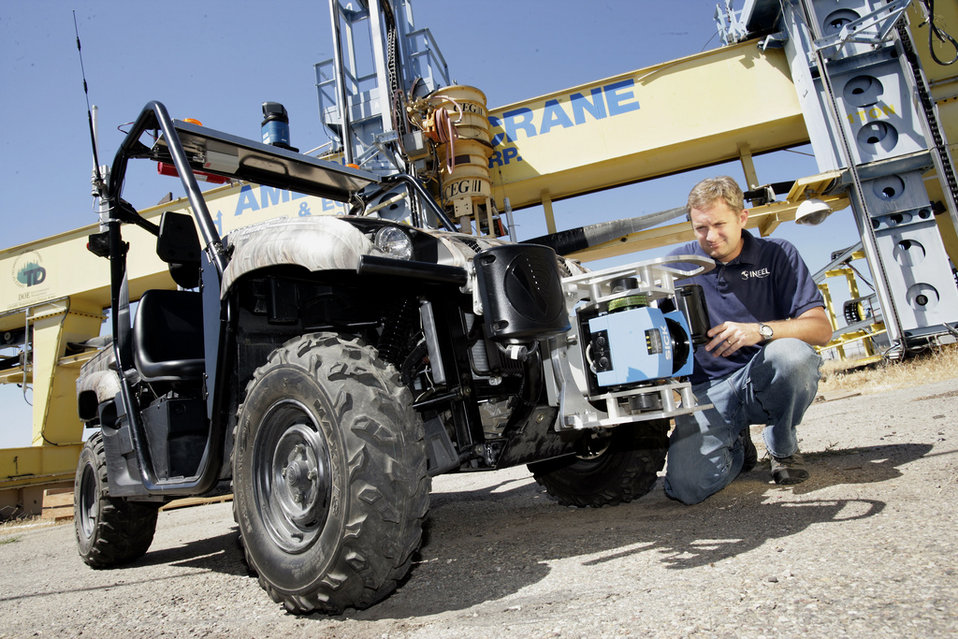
INL's robotics team retrofitted this vehicle with an intelligence systems that lets it run autonomously.